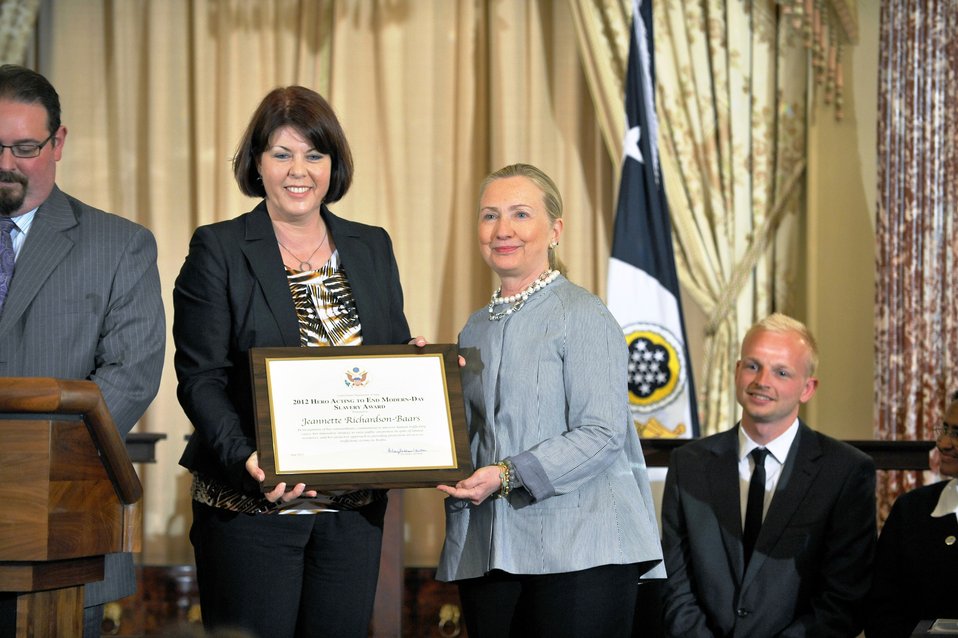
Secretary Clinton With TIP Hero Jeanette Richardson-Baars

U.S. Secretary of State Hillary Rodham Clinton honors Jeanette Richardson-Baars of Aruba, a 2012 Trafficking in Persons (TIP) Report Hero, at the U.S. Department of State in Washington, D.C., on June 19, 2012.